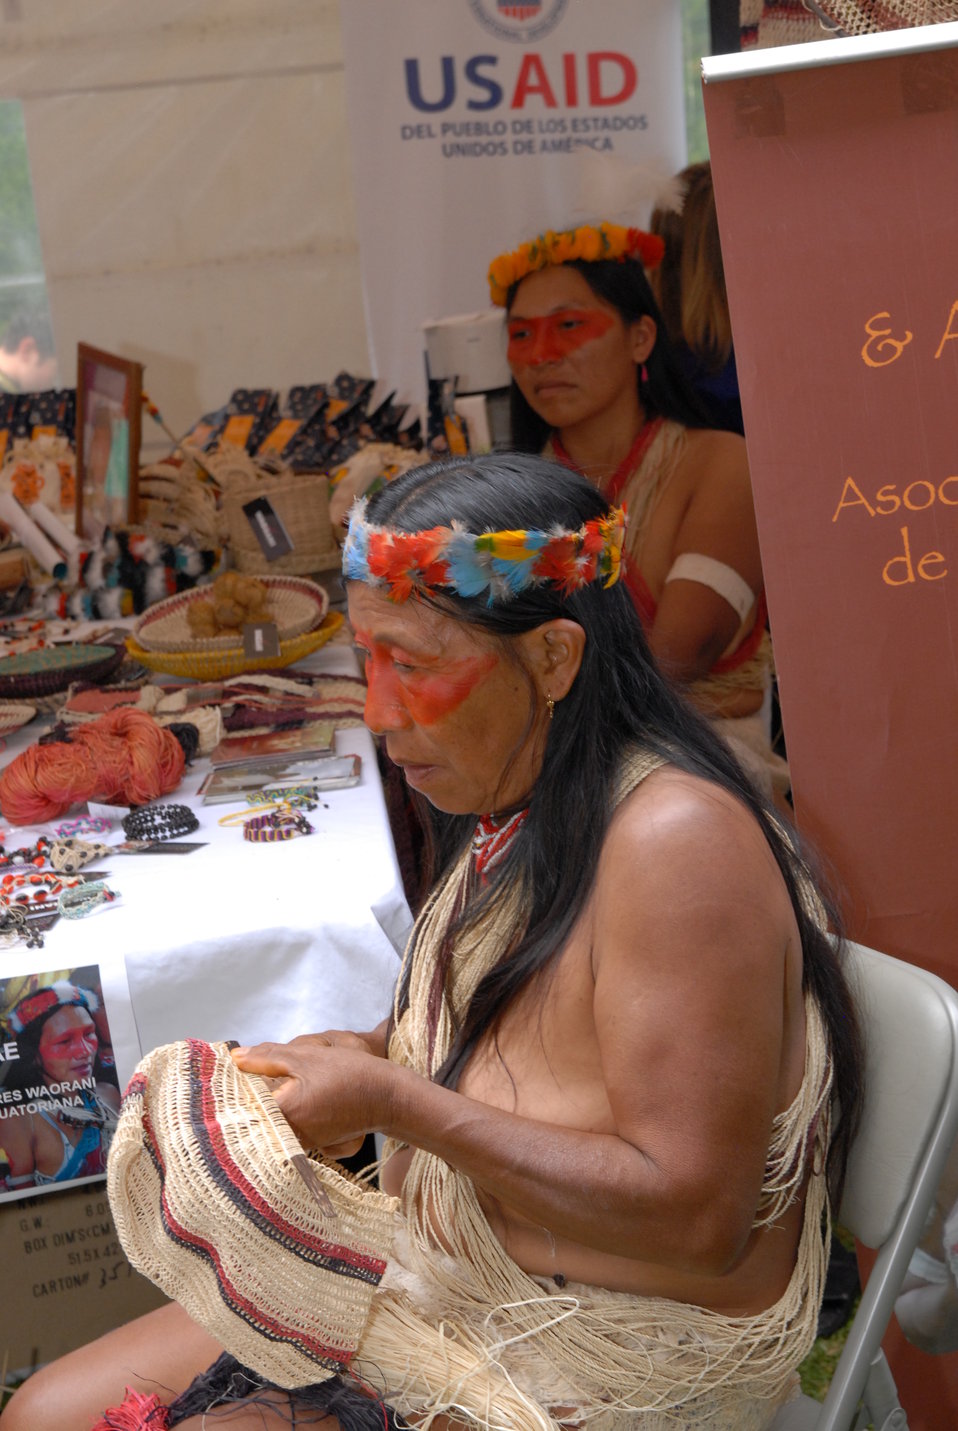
July 4th Celebration at U.S. Embassy in Ecuador

Women from the Association of Waorani Women, beneficiaries of USAID programs, demonstrate how they produce handicrafts to benefit and self-sustain women of the association at the U.S. Embassy Quito in Ecaudor’s U.S. Independence Day celebration on July 2, 2010.